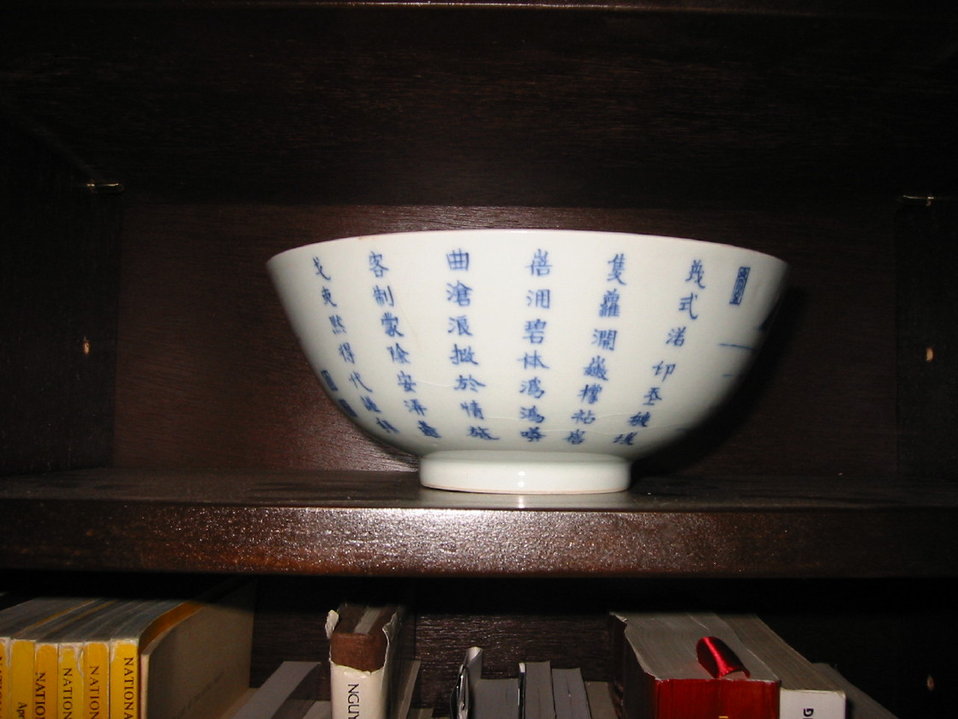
Tiếng Việt: Đọi men lam Huế, tự chụp